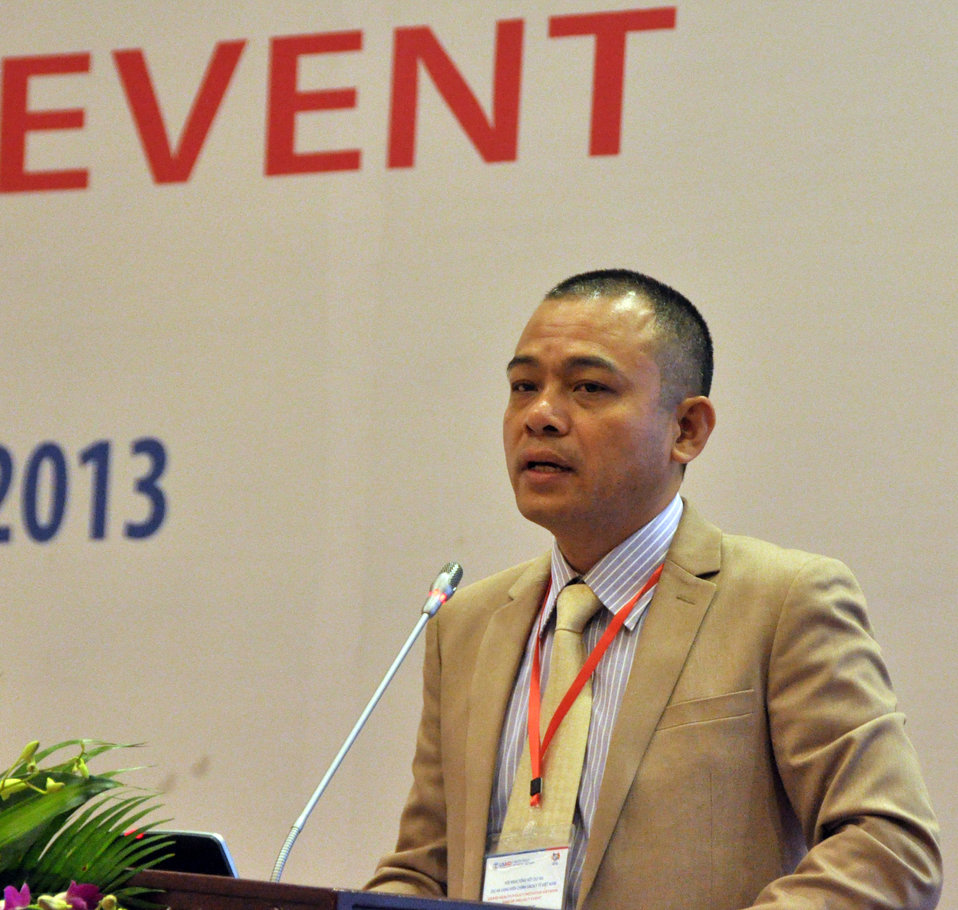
USAID Health Policy Initiative End of Project Workshop

Hanoi, August 14, 2013.